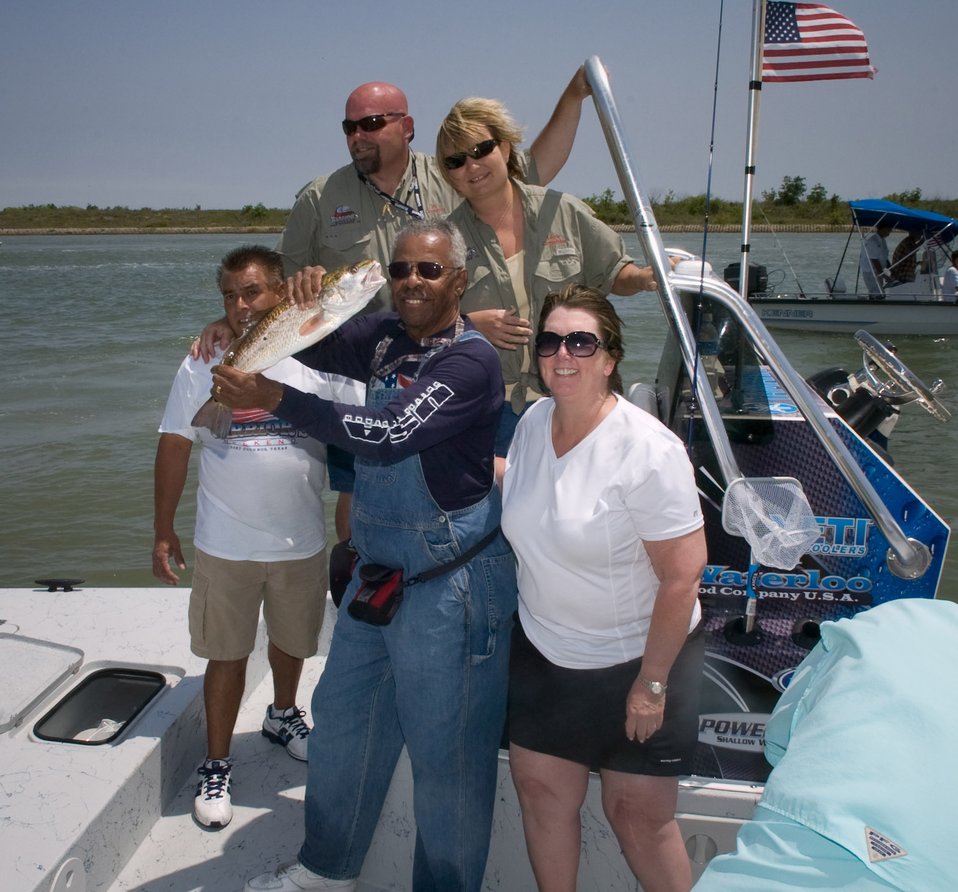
Wounded Warrior

Donald